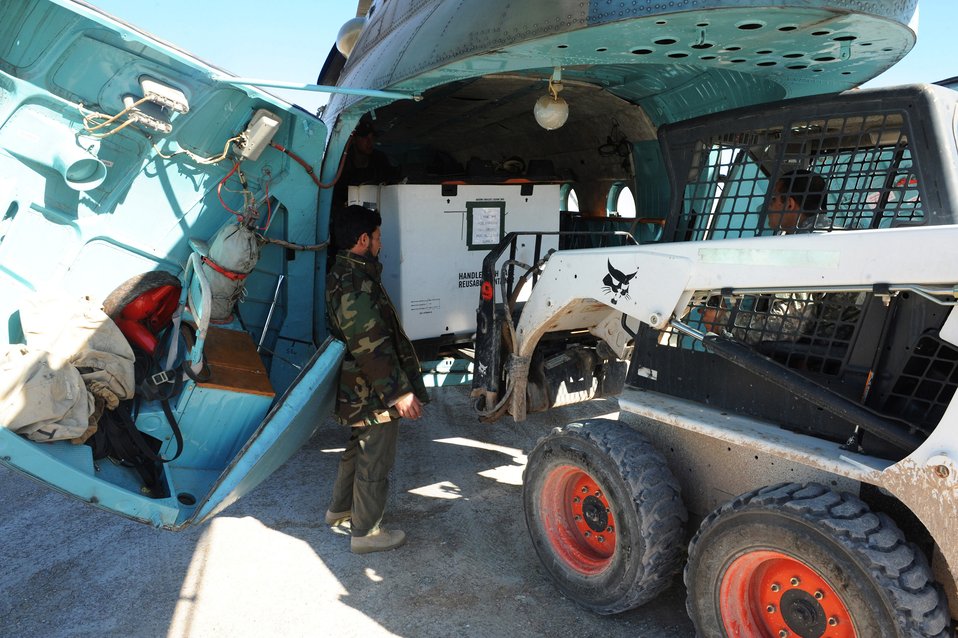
Flight engineer helps a U.S. Soldier unload a pallet of cargo

An Afghanistan National Army Air Corps flight engineer helps a U.S. Soldier unload a pallet of cargo out of an Mi-17 cargo door during a joint mission Jan. 7, 2010, at Forward Operating Base Tarin Kowt, Afghanistan. Missions like this are becoming more common as 441st Air Expeditionary Advisory Squadron Airmen mentor Mi-17 helicopter pilots.